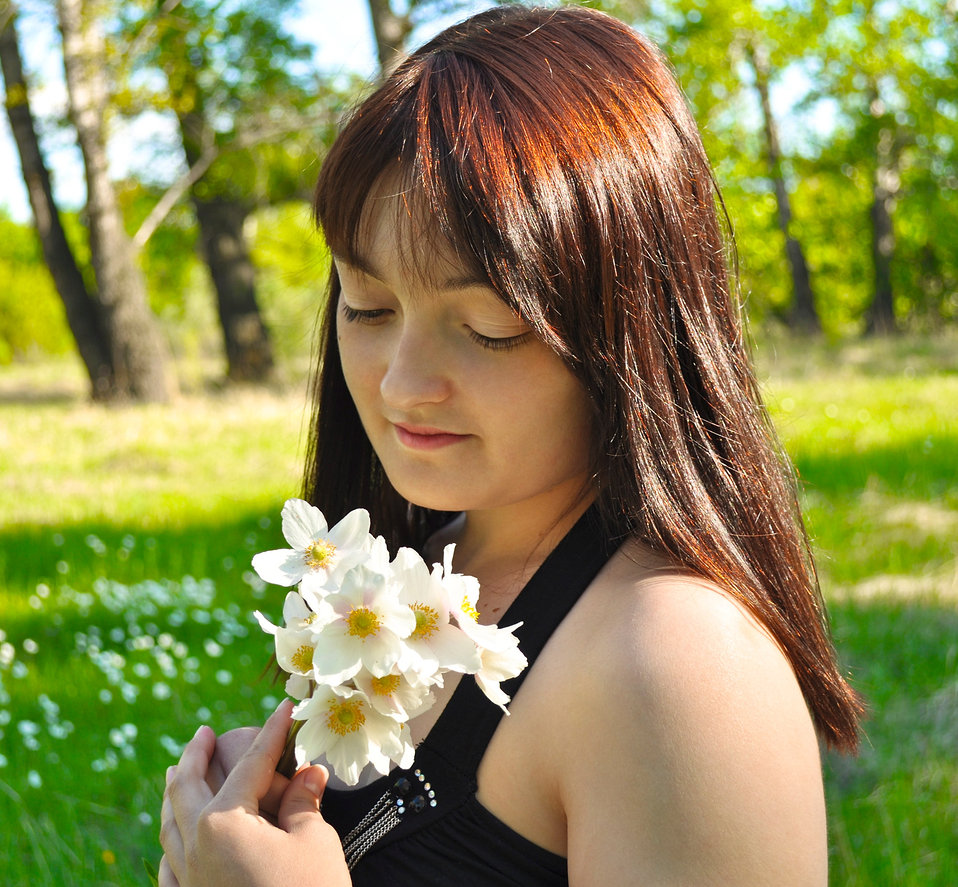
A girl with white flowers

Portrait of a girl with flowers.